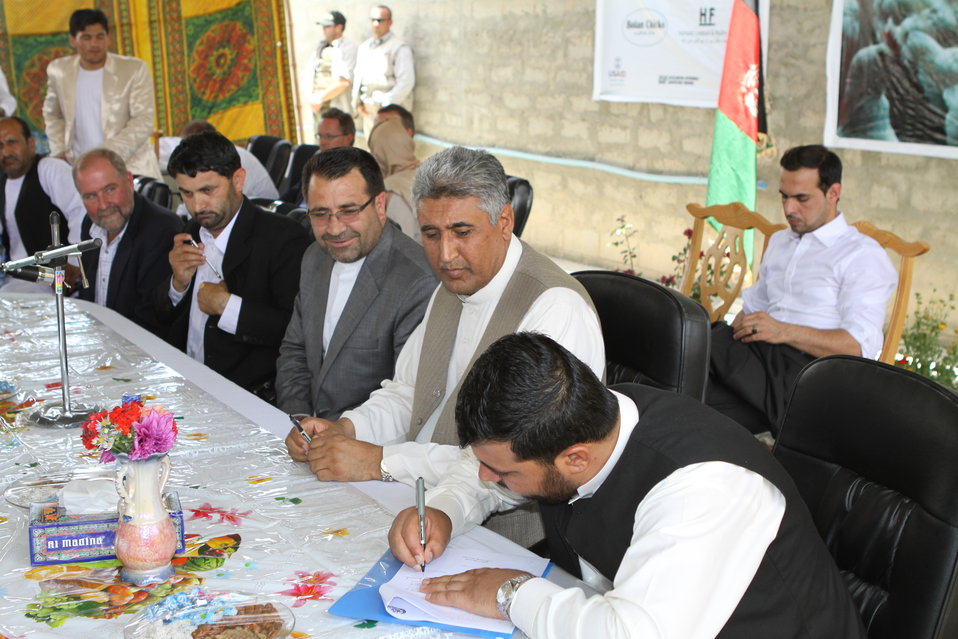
Bolan Poultry Farm